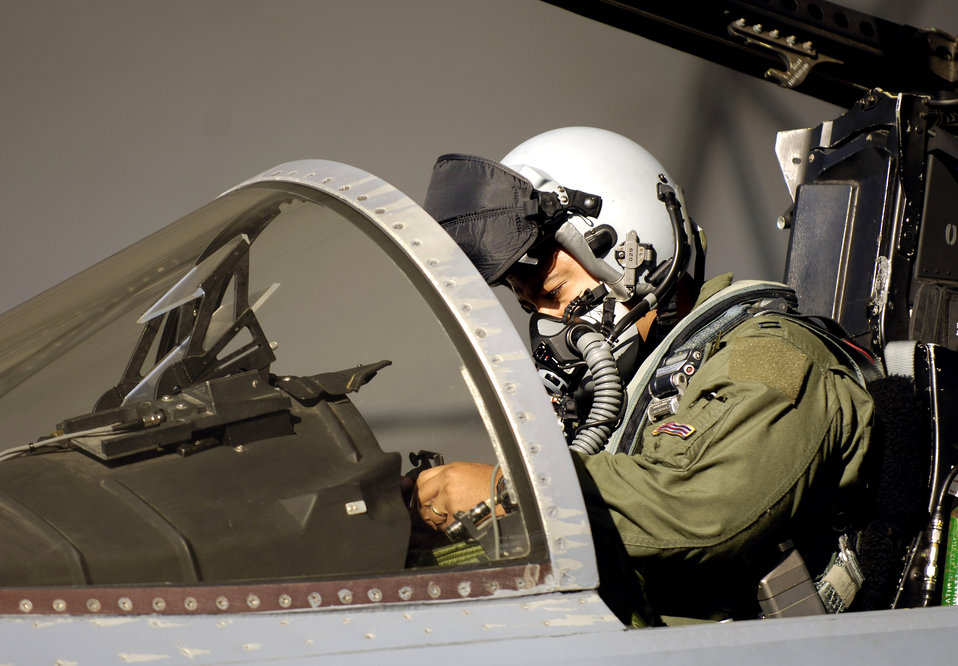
Eagles soar again

Capt. Philip Mallory prepares his F-15 Eagle to begin flying for his currency training Jan. 9 at Hickam Air Force Base, Hawaii. Captain Mallory is from the 199th Fighter Squadron of the Hawaii Air National Guard. Pilots of the 199th FS have not flown since the Air Force grounded their F-15 fleet Nov. 3, 2007. Air Combat Command officials cleared a portion of its F-15 A through D models to begin flying Jan. 9.